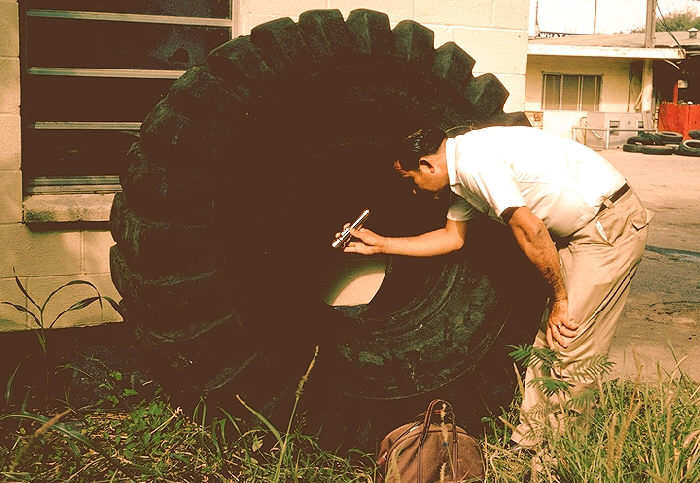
Huge tire, Aedes aegypti mosquito breeding site, McAllen, Texas.